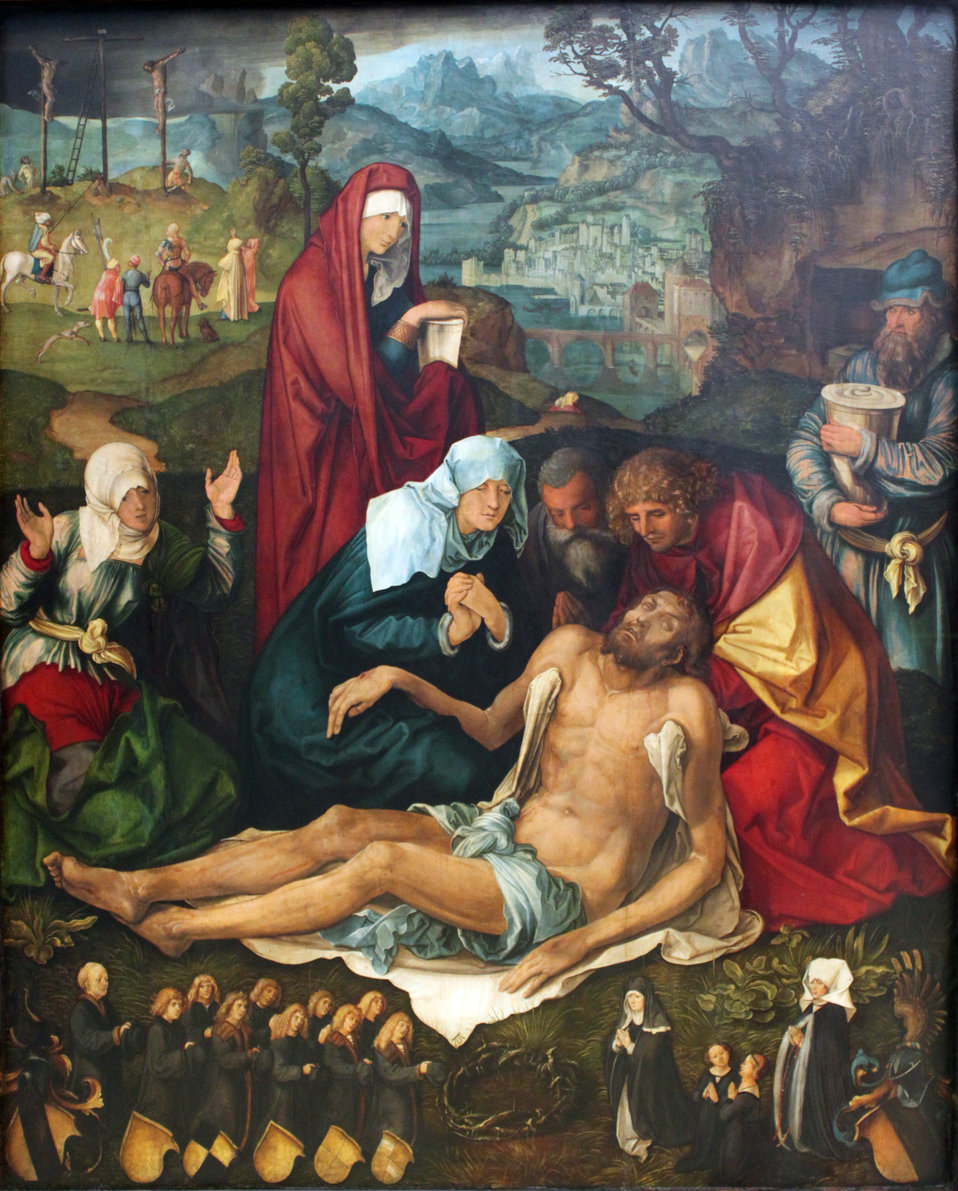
1499 Dürer Beweinung Christi anagoria